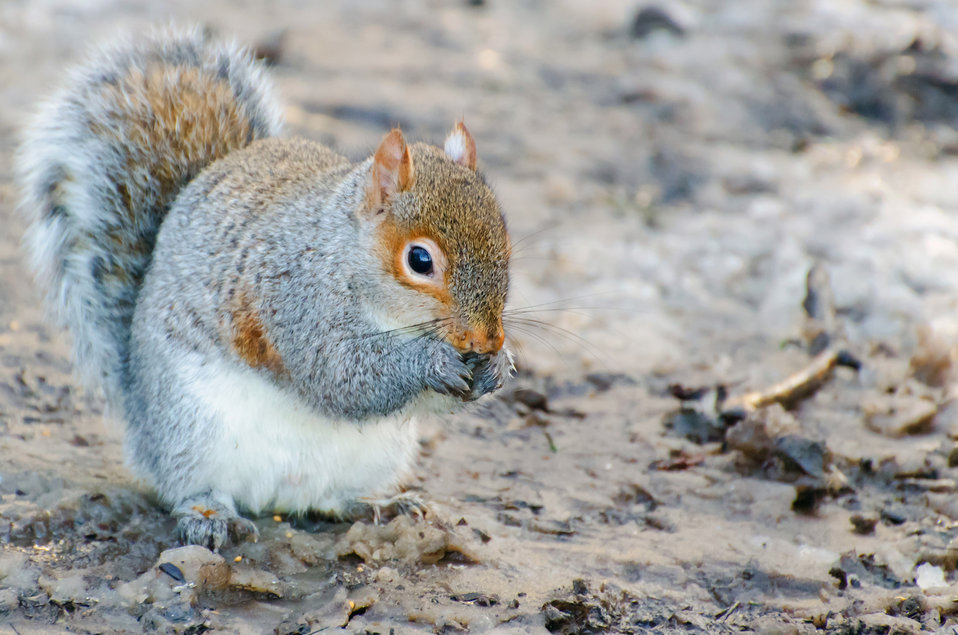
Squirrel - macro.